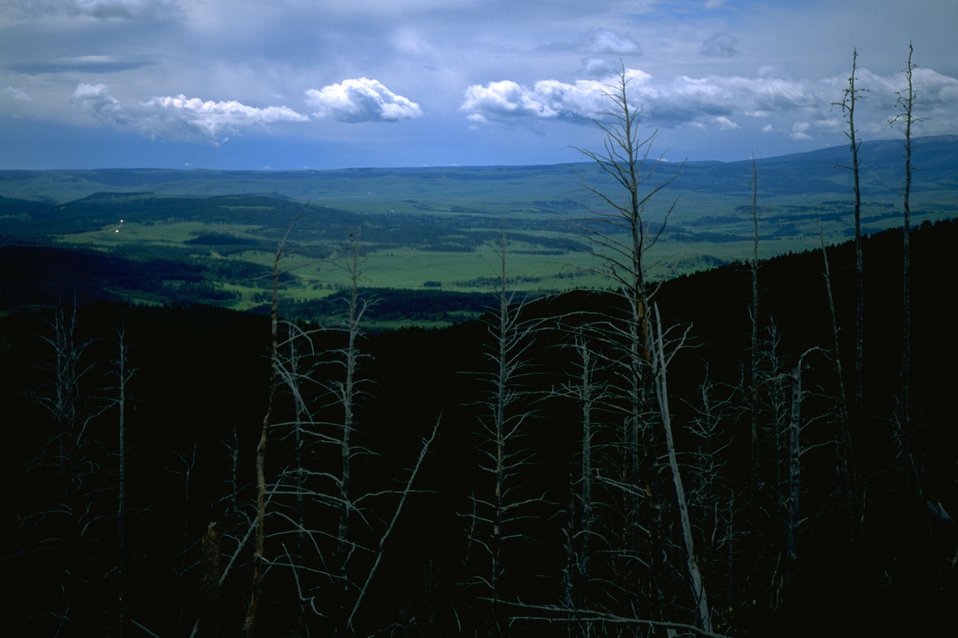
Scenic view of contract between green valley, dark trees and stormy sky